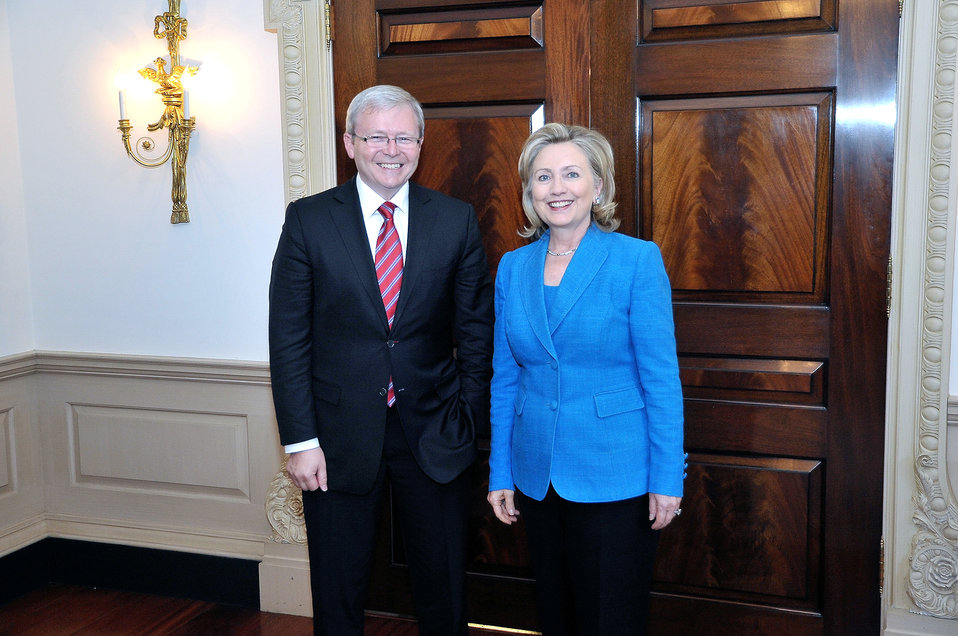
Secretary Clinton Poses for a Photo With Australian Foreign Minister Rudd

U.S. Secretary of State Hillary Rodham Clinton poses fora photo with Australian Foreign Minister Kevin Rudd following their bilateral meeting at the U.S. Department of State in Washington, D.C., on September 17, 2010.